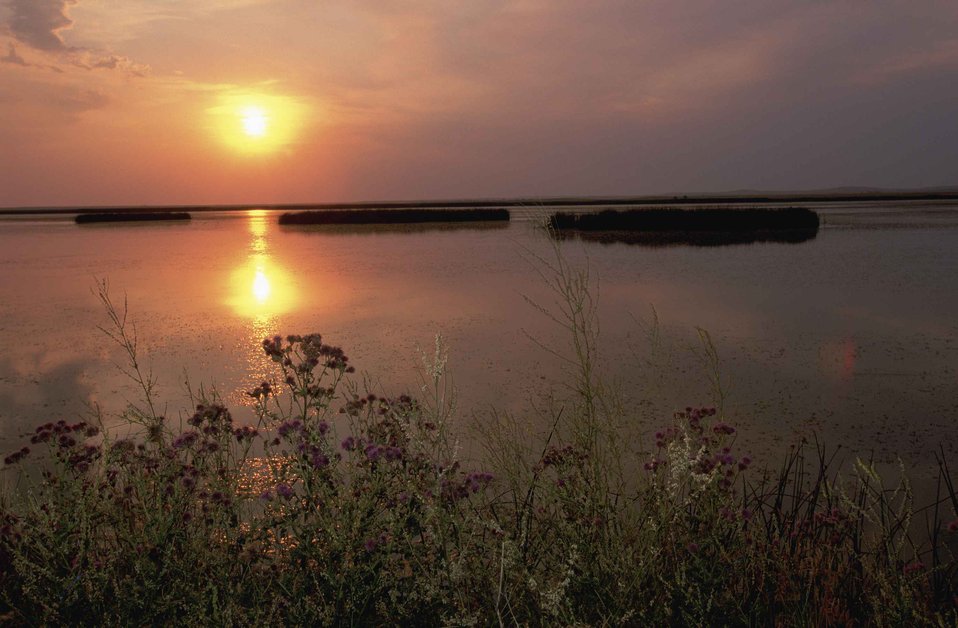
English:
Image title: Beautiful sunset at lake Image from Public domain images website, http://www.public-domain-image.com/full-image/nature-landscapes-public-domain-images-pictures/sunset-public-domain-images-pictures/beautiful-sunset-at-lake.jpg.html